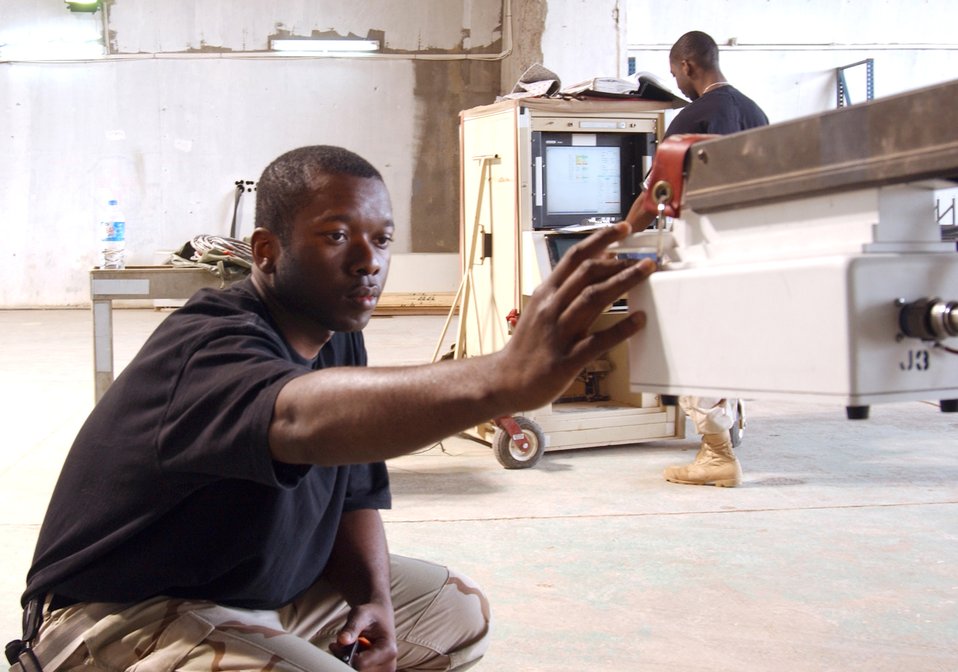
Weapons load crews keep mission on target

BALAD AIR BASE, Iraq (AFPN) -- Staff Sgts. Jawann Wilson (foreground) and Bryan Larry perform a weapon system confidence check on an MQ-1 Predator unmanned aerial vehicle. The Airmen -- weapons load crew members -- are with the 332nd Expeditionary Aircraft Maintenance Squadron.